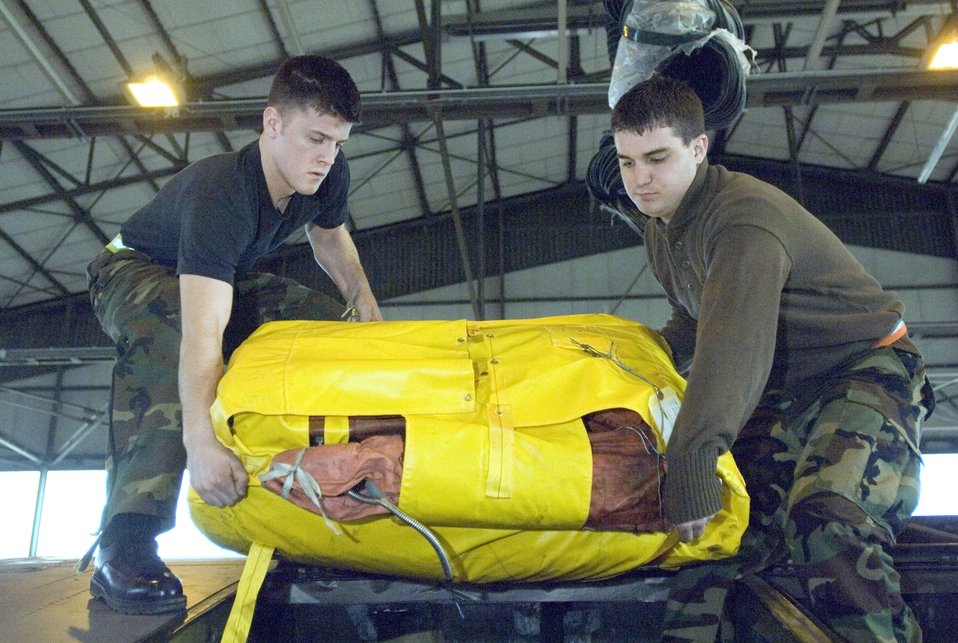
Herc operations

Airman 1st Class Beau Strausbaugh and Senior Airman Andrew Tishim, left to right, install a life raft into a C-130 Hercules at Ramstein Air Base, Germany, on Monday, March 27, 2006. The Airmen are Hercules crew chiefs with the 86th Aircraft Maintenance Squadron.